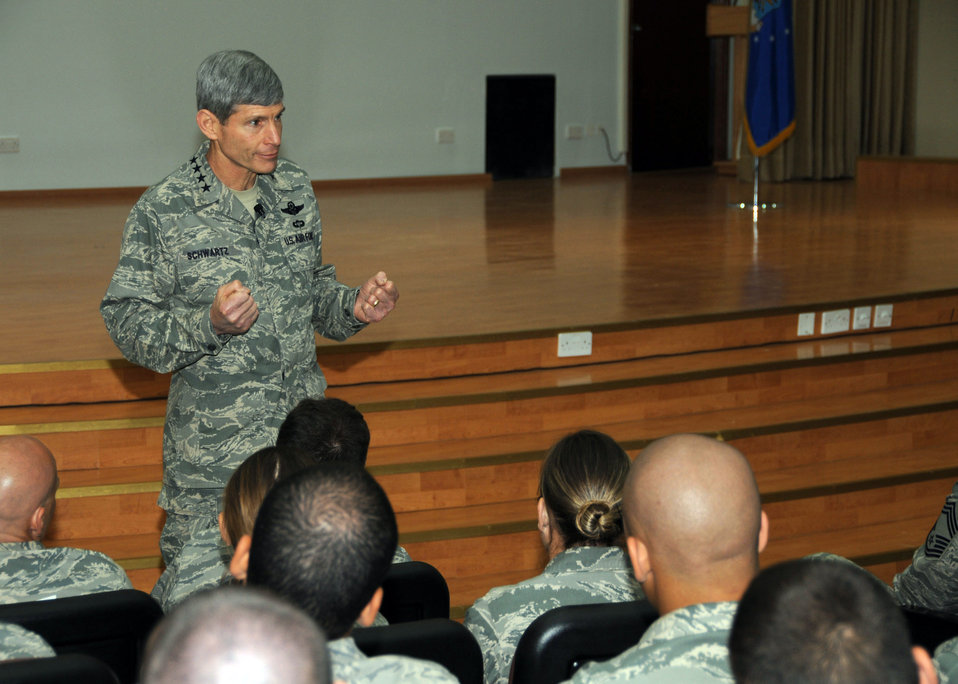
CSAF addresses 386th Airman during AOR visit

Air Force Chief of Staff Gen. Norton Schwartz talks about their mission and the current changes in the Air Force to the Airmen of the 386th Air Expeditionary Wing April 6 at an air base in Southwest Asia. General Schwartz, accompanied by his wife, is visiting Airmen throughout the area of responsibility, to inform them and answer questions they might have about changes in the Air Force.